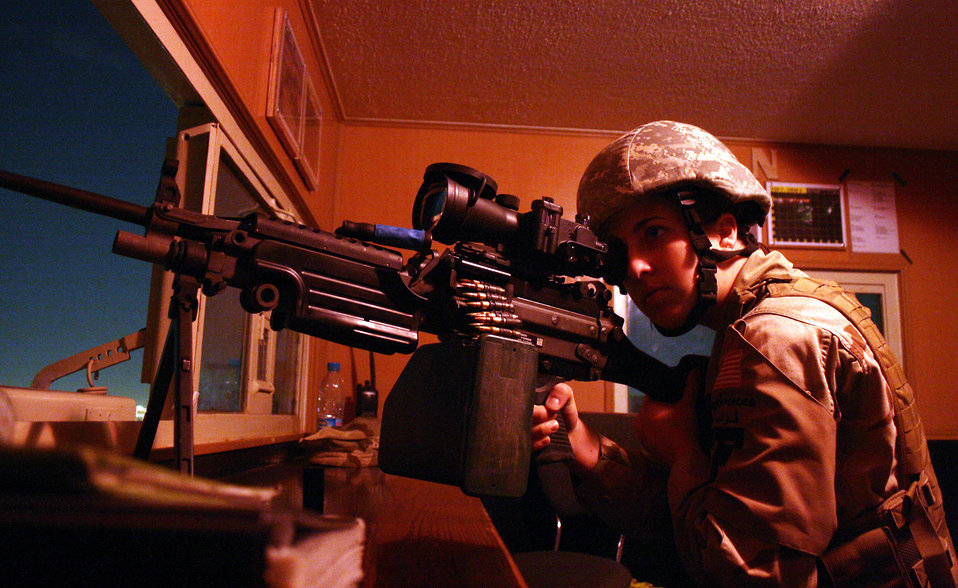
I've got my eyes on you

Senior Airman Rachel Albee watches a perimeter at a Southwest Asia base Oct. 1. Airman Albee is deployed from the Iowa Air National Guard's 132nd Fighter Wing in Des Moines, and assigned to the 64th Expeditionary Security Forces Squadron.